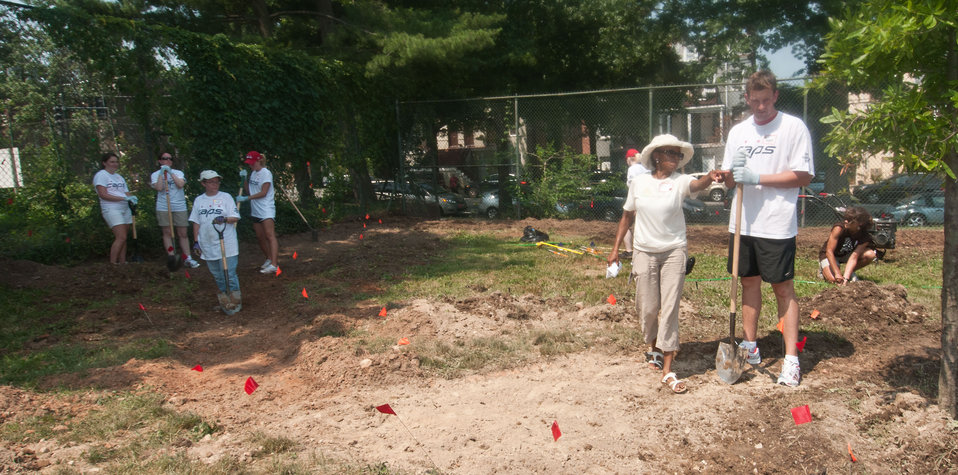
U.S. Department of Agriculture Departmental Management Project Manager Leslie Burks (standing second from right) gives Washington Capitals defenseman Jeff Schultz (standing right) a tour of the People’s Garden construction site before assigning him to a project team. “Caps” fan volunteers (left) take a brief break in the shade to look at the towering professional hockey player at the William B. Powell Elementary School, in Washington, DC, on Thursday, June 9, 2011 Volunteers from U.S. Department of Agriculture People’s Garden Executive Master Gardener program and Washington Capitals hockey organization, along with defenseman Jeff Schultz, and mascot Slapshot transformed a grassy corner of the school playground into a habitat garden and outdoor learning area. Executive Master Gardeners led the volunteer project teams. The Washington Capitals donated new tools; tool shed; garden materials; lunch; most of the volunteers and more. The completed projects included a walking path; tiling of garden plots; planting a bird habitat garden, pollinator garden and native grasses; caterpillar and butterfly plaques; hummingbird and bat house, and tool shed. The garden will later include a picnic area, outdoor classroom, hummingbird garden, Monarch watch garden, native bee garden, and birdbath. USDA challenges its employees to establish People's Gardens at USDA facilities worldwide or on this case, help communities create gardens. People's Gardens vary in size and type, but all have a common purpose - to help the community and the environment.